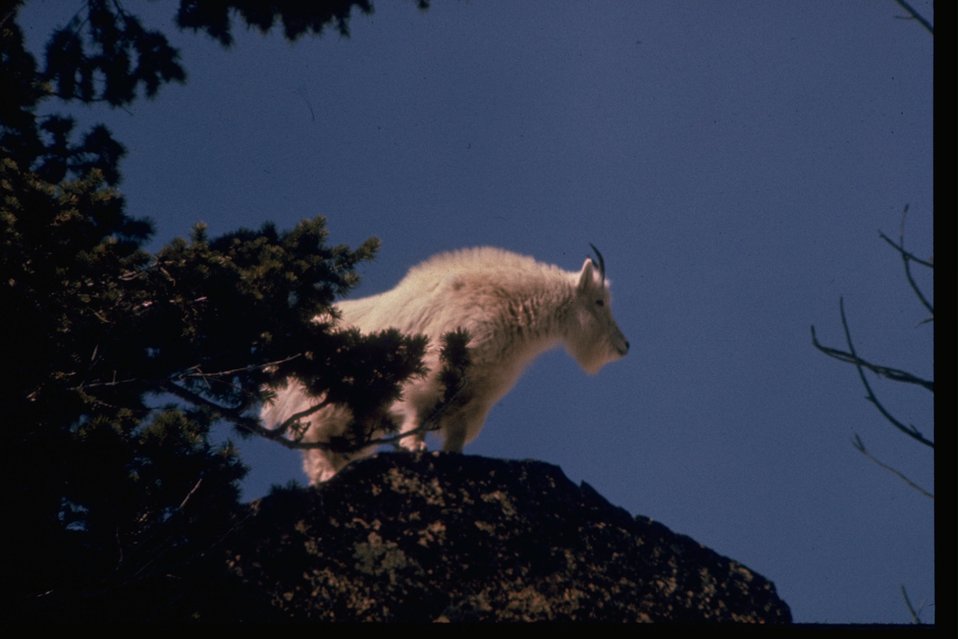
A mountain goat standing on large rock.